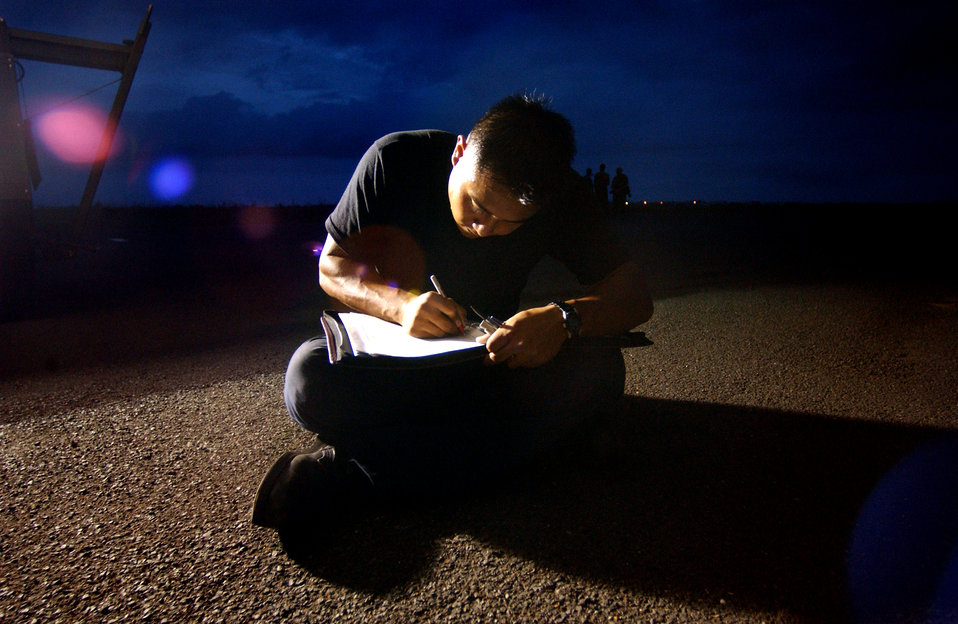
Keeping record

DAKAR, Senegal -- Senior Airman Brandon Hashida updates the maintenance log after a C-130 Hercules returns from a mission. Hashida is deployed here with the 398th Air Expeditionary Group. He is assigned to the 86th Aircraft Maintenance Squadron at Ramstein Air Base, Germany.